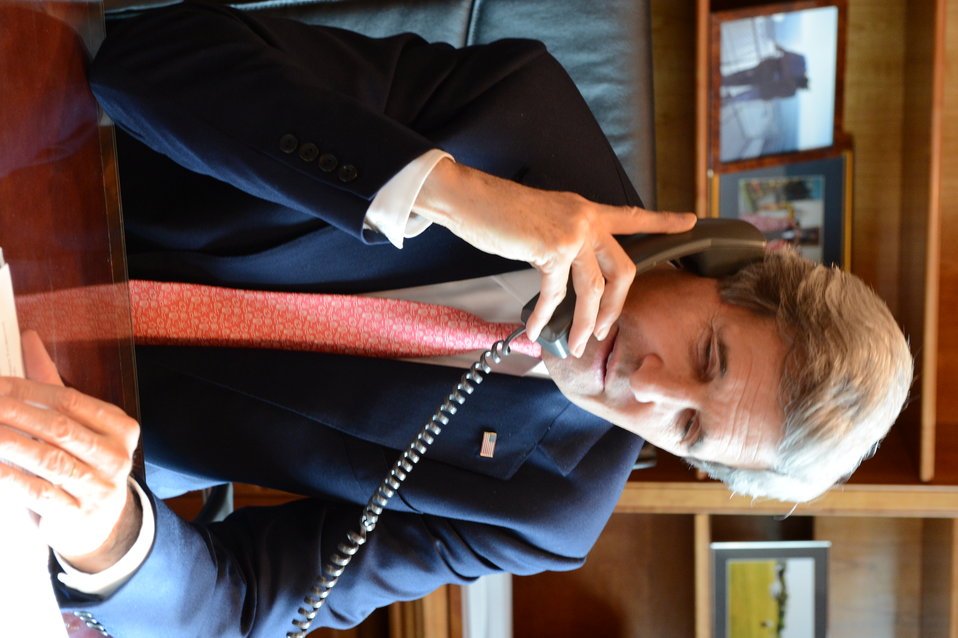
Secretary Kerry Speaks With British Foreign Secretary Hague

U.S. Secretary of State John Kerry speaks with British Foreign Secretary William Hague at the U.S. Department of State in Washington, D.C., February 4, 2013.